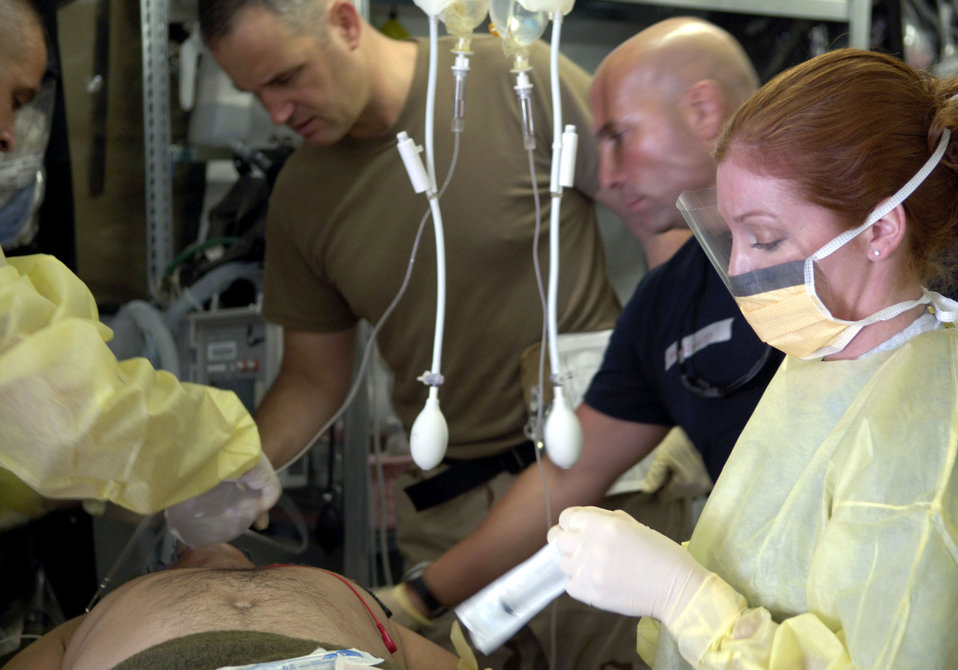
Specialized care

Medics from the Air Force Theater Hospital treat emergency room patients at Balad Air Base, Iraq, on Aug. 2. The hospital provides Level 1 trauma and specialized medical care.